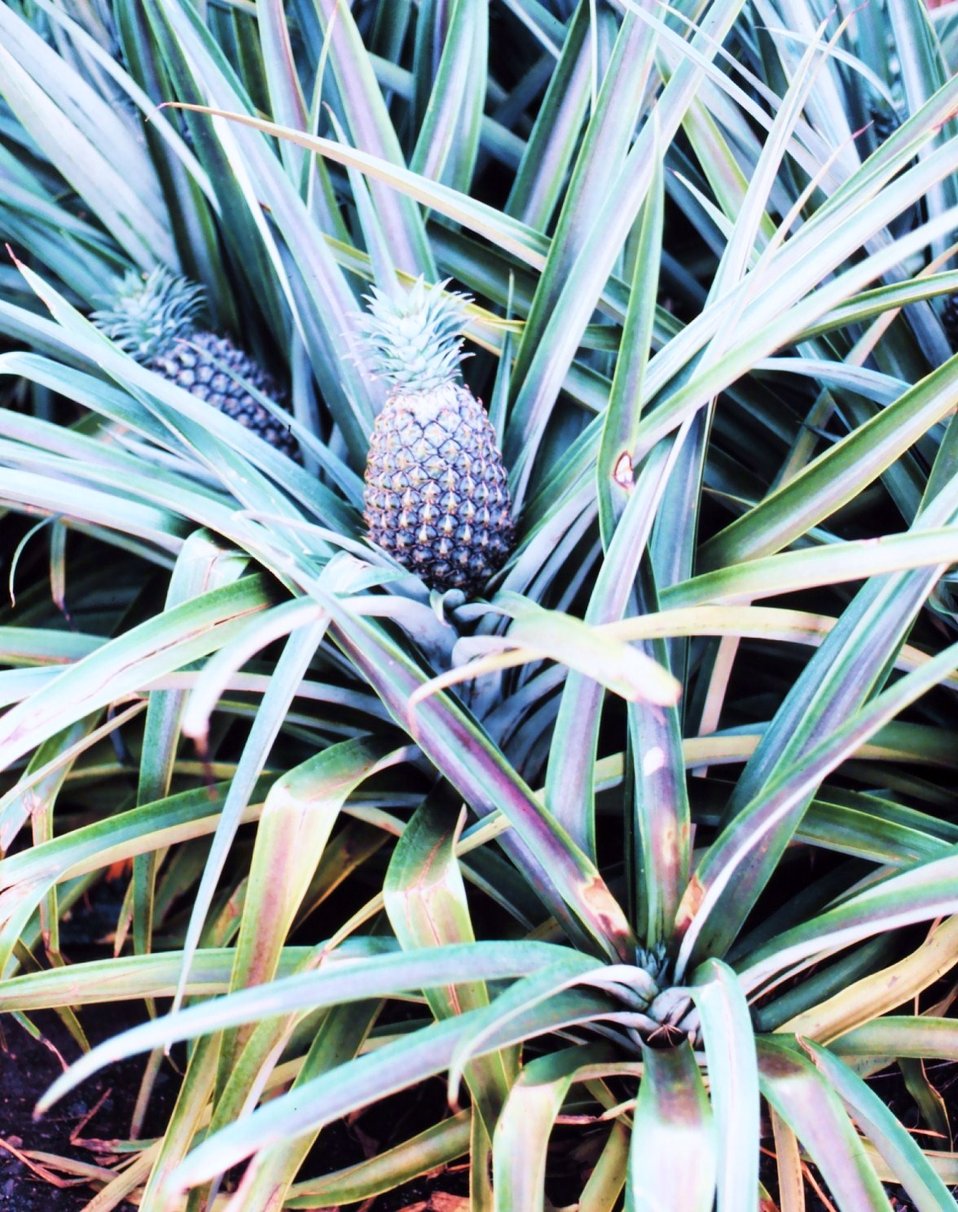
A pineapple plant with the fruit nearly ready to harvest